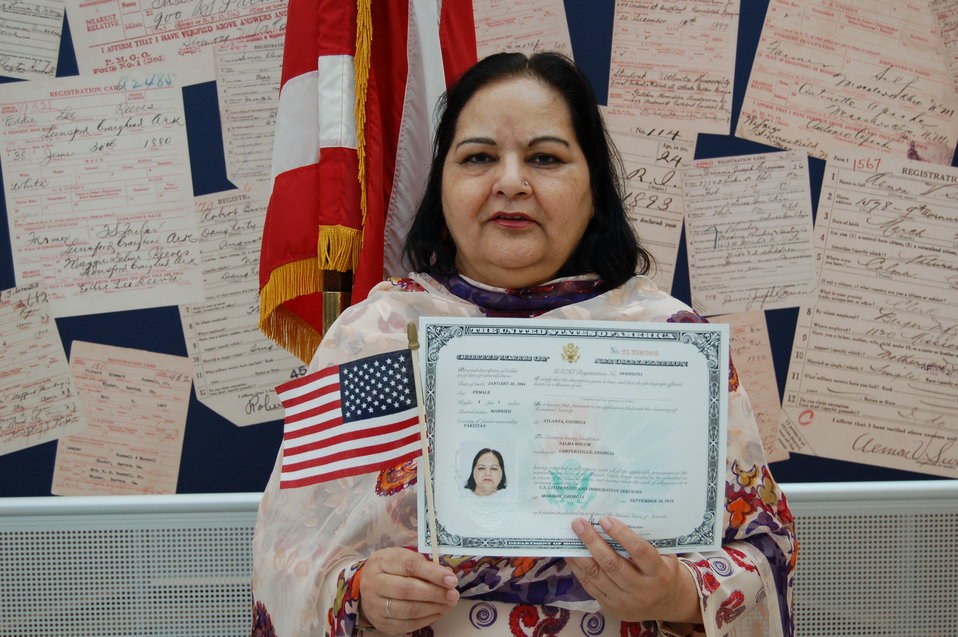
New Citizens